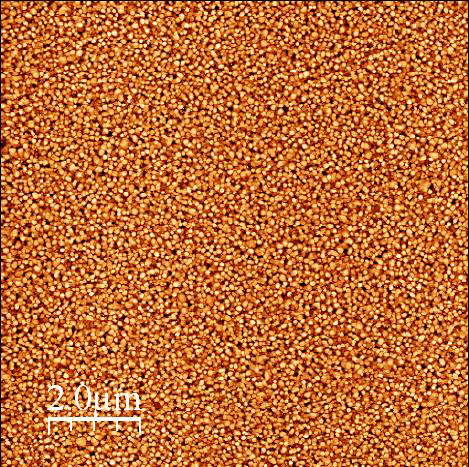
Molecular Electronics

Gold surfaces created by other methods are substantially rougher, and would result in many of the molecular switches either being smashed or not contacting the silicon.